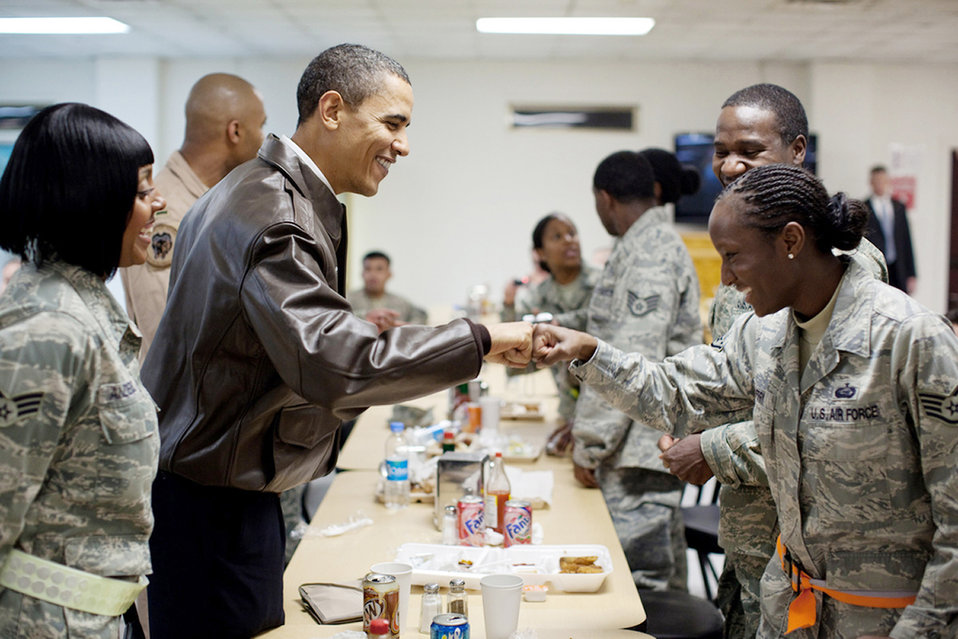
Fist-bumping the Chief

President Barack Obama meets U.S. troops at a dining hall March 28, 2010, Bagram Airfield, Afghanistan.